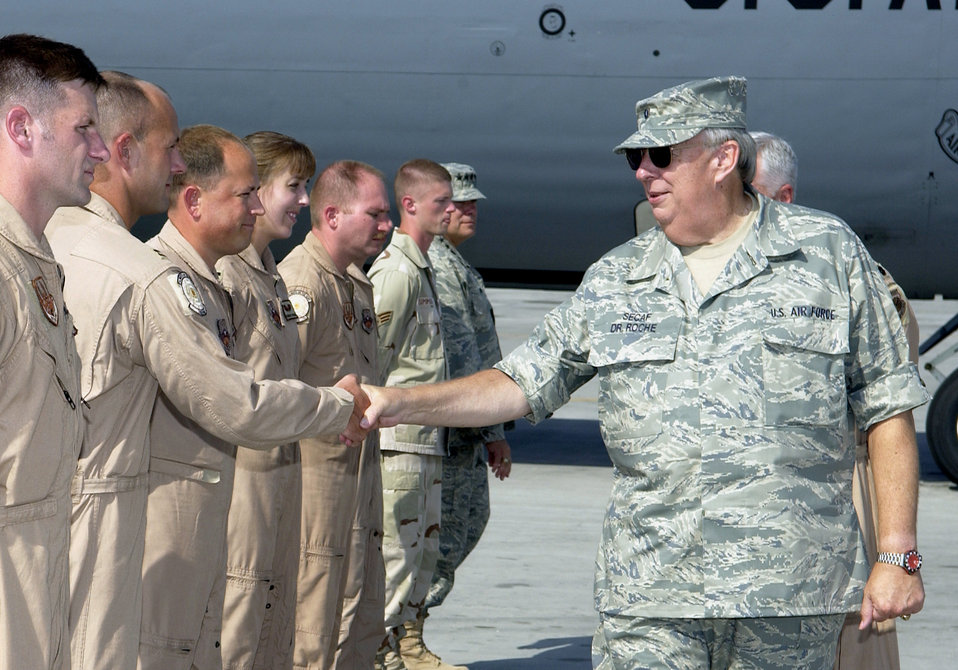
Air Force leaders premiere new uniform

SOUTHWEST ASIA -- Secretary of the Air Force Dr. James G. Roche shakes hands Nov. 4 with aircrew members deployed to Southwest Asia. The secretary, Air Force Chief of Staff Gen. John P. Jumper and Chief Master Sgt. of the Air Force Gerald R. Murray are traveling the area visiting deployed Airmen.